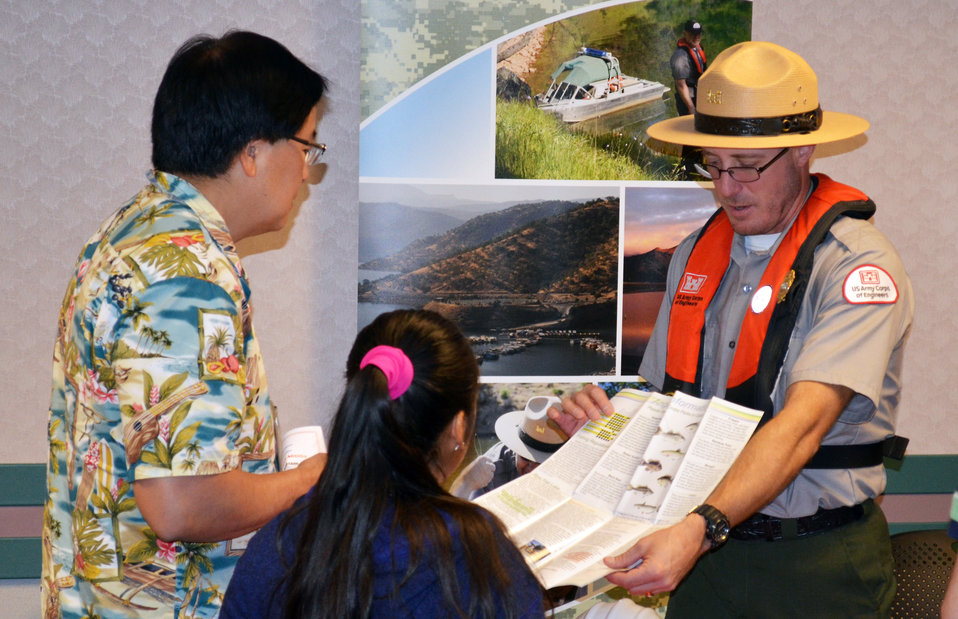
“Bring Your Child to Work Day” promotes science and technology jobs

Adam Thompson, a park ranger with the U.S. Army Corps of Engineers Sacramento District, explains the Corps’ parks and recreation mission during the “Bring Your Child to Work Day” event Aug. 8, 2013 at district headquarters in Sacramento, Calif. The district hosted the event to encourage kids to pursue careers in science, technology, engineering and mathematics, or STEM.